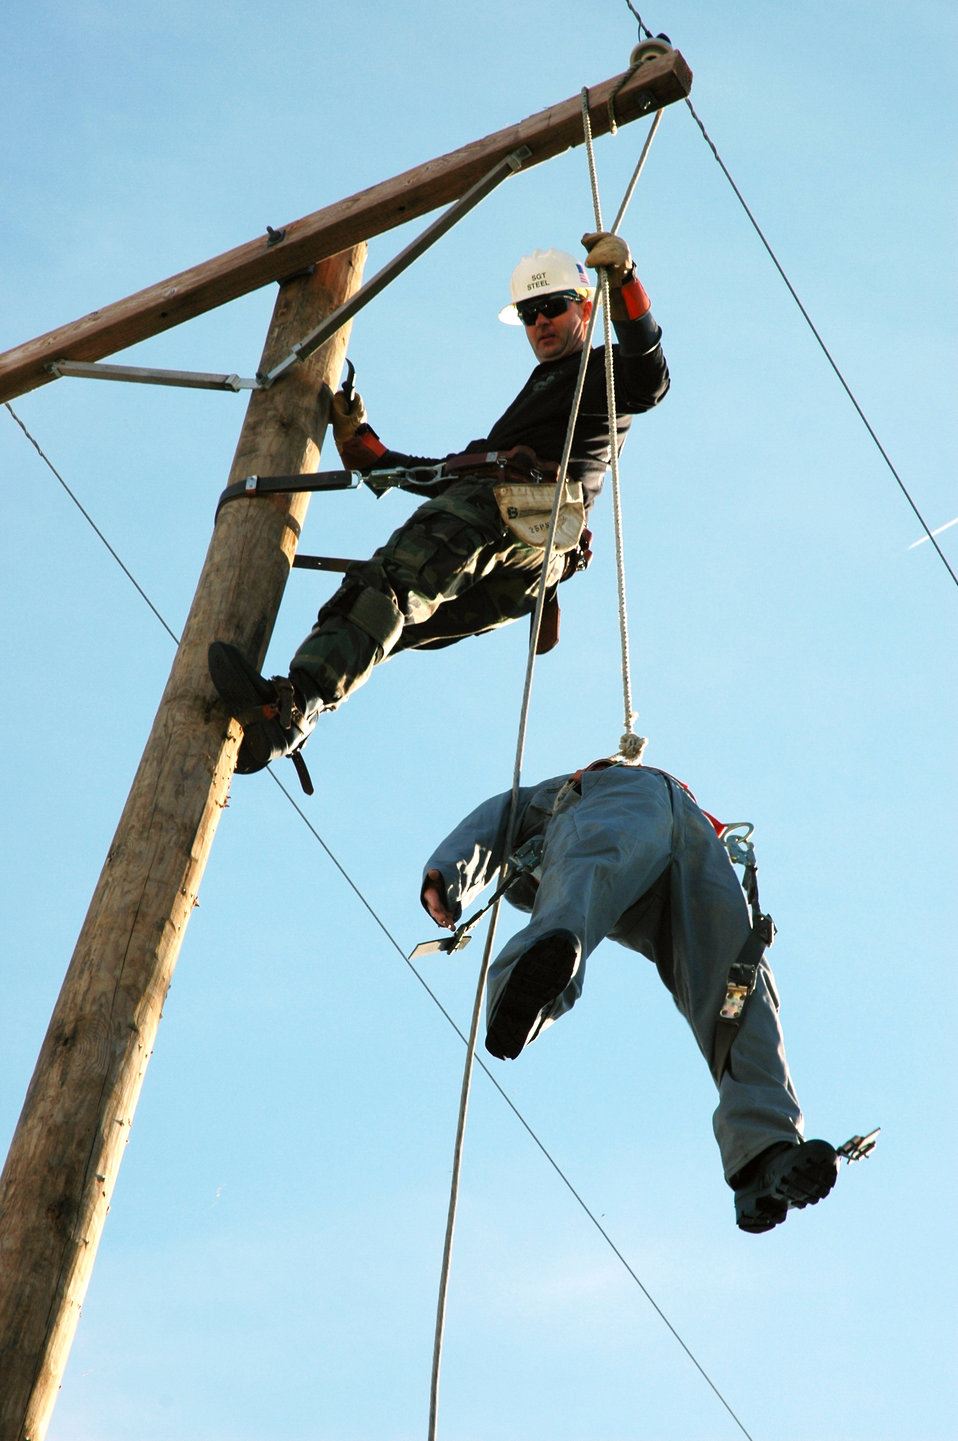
Hang on!

BONNER SPRINGS, Kan. -- Master Sgt. Rusty Steel helps an electric-shock